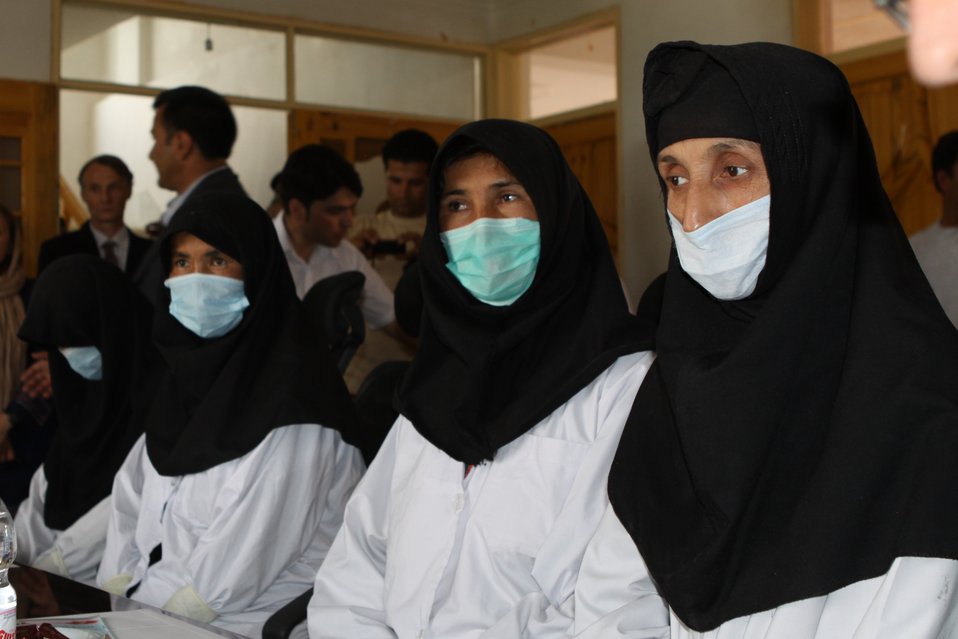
100525 Hirat Marble Conference 848